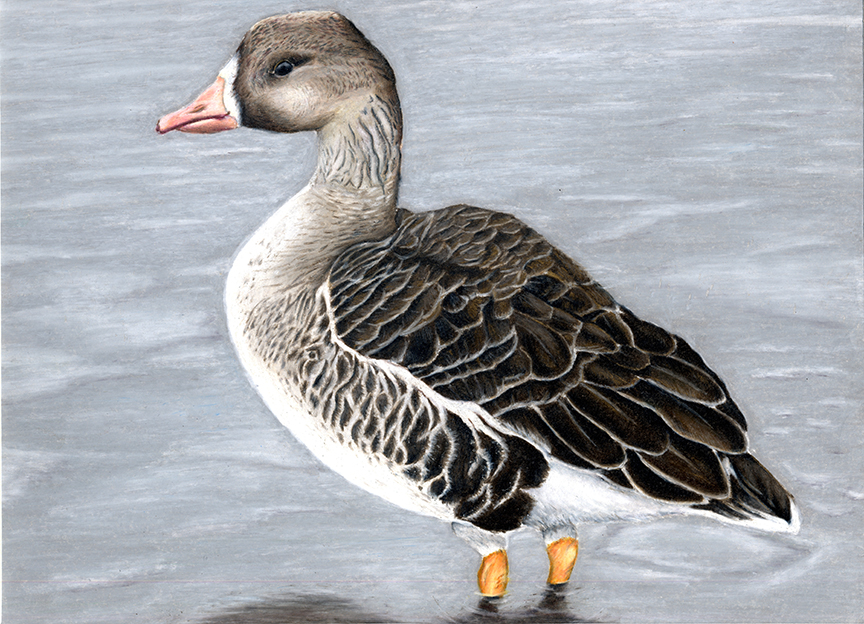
JRDuck2013ND

2013 Junior Duck Stamp Best of Show-North Dakota